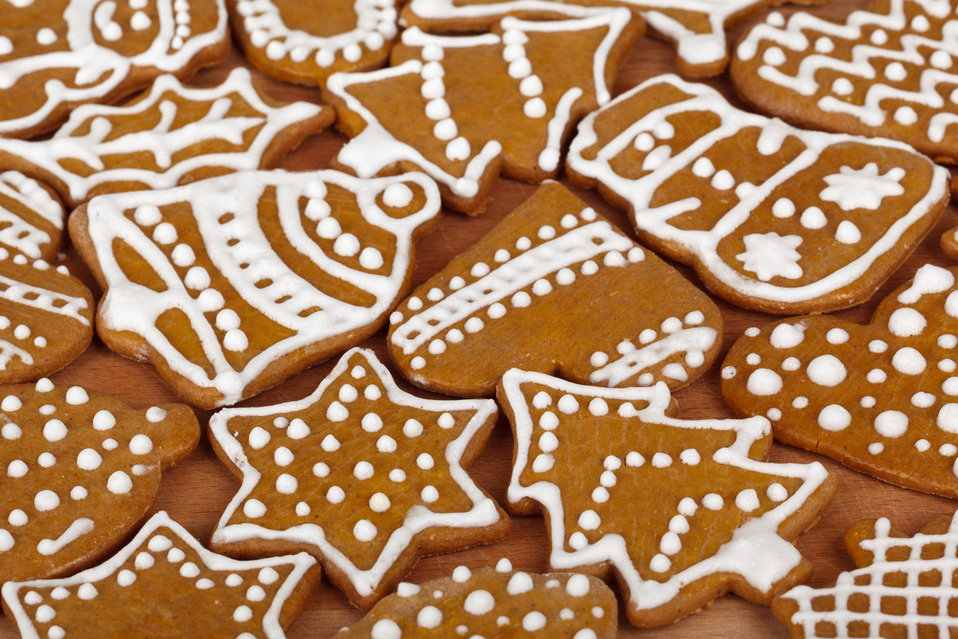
Gingerbread cookies background.